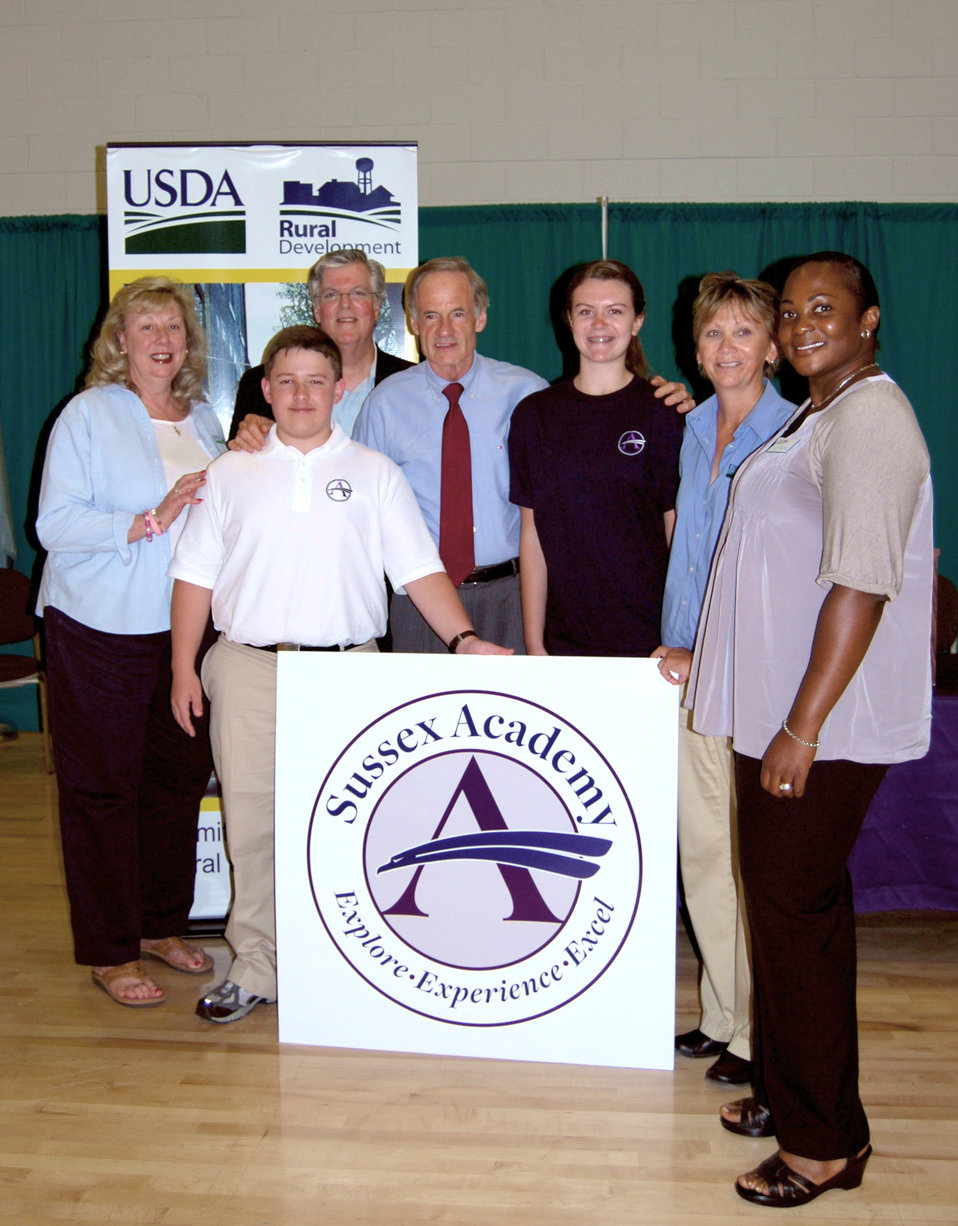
dsc 0304 (3)

(L to R) U.S. Department of Agriculture (USDA) Rural Development (RD) Community Program Director Denise MacLeish, USDA Director of Legislative and Public Affairs David Sandretti, rising freshman Cohen Davis, U.S. Senator Tom Carper, rising eigth grader Elise Conlin, Acting Delaware/Maryland State Director Kathy Beisner, and Loan Specialist Angela Tilghman stand in front of the Sussex Academy’s new logo. The USDA’s Rural Development Community Facilities Program (CFP) provided funding to the academy to move to a larger facility. The USDA RD CFP provides both guaranteed and direct loans to public bodies and non-profit corporations for essential community facilities in rural areas of the country.